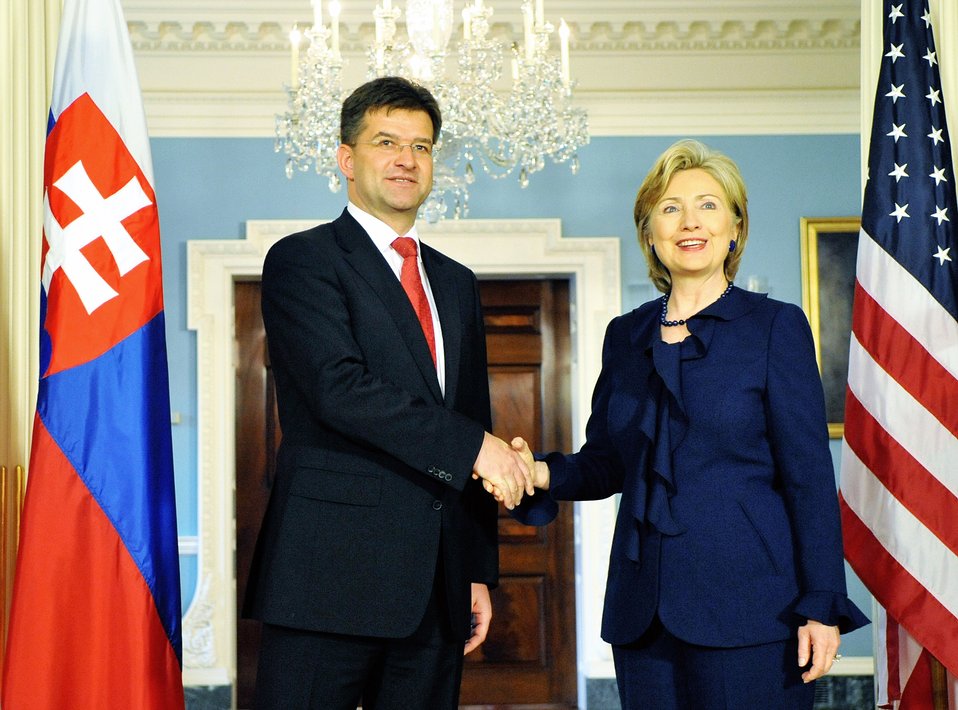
Secretary Clinton Meets With Slovak Foreign Minister

U.S. Secretary of State Hillary Rodham Clinton hosts a bilateral meeting with Slovak Foreign Minister Miroslav Lajcak in the Treaty Room of the U.S. Department of State in Washington, DC May 7, 2009.